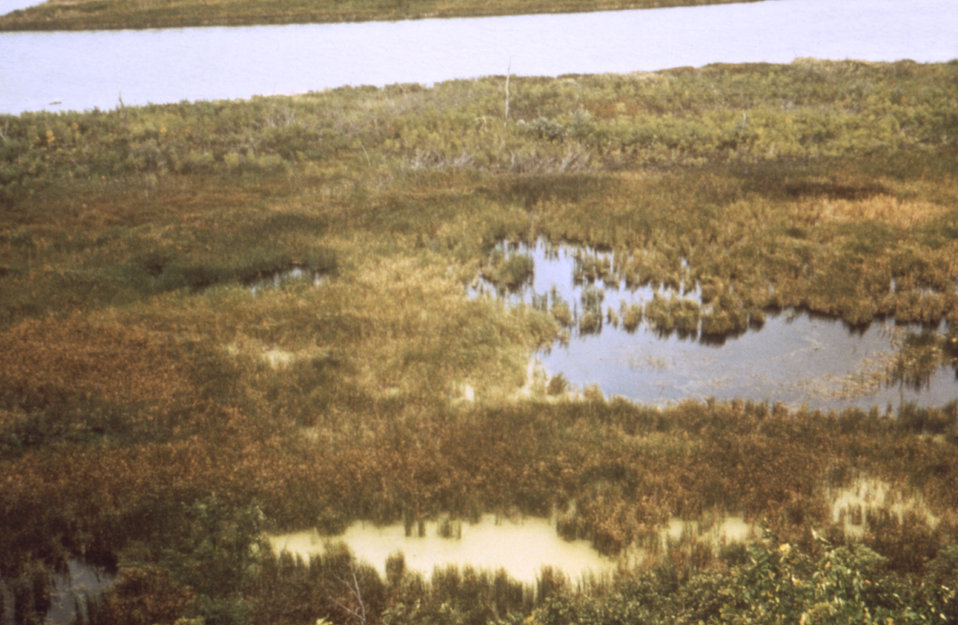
This 1976 photograph shows a small marginal pool off the shoreline of Lewis and Clark Lake in Santee, Nebraska.